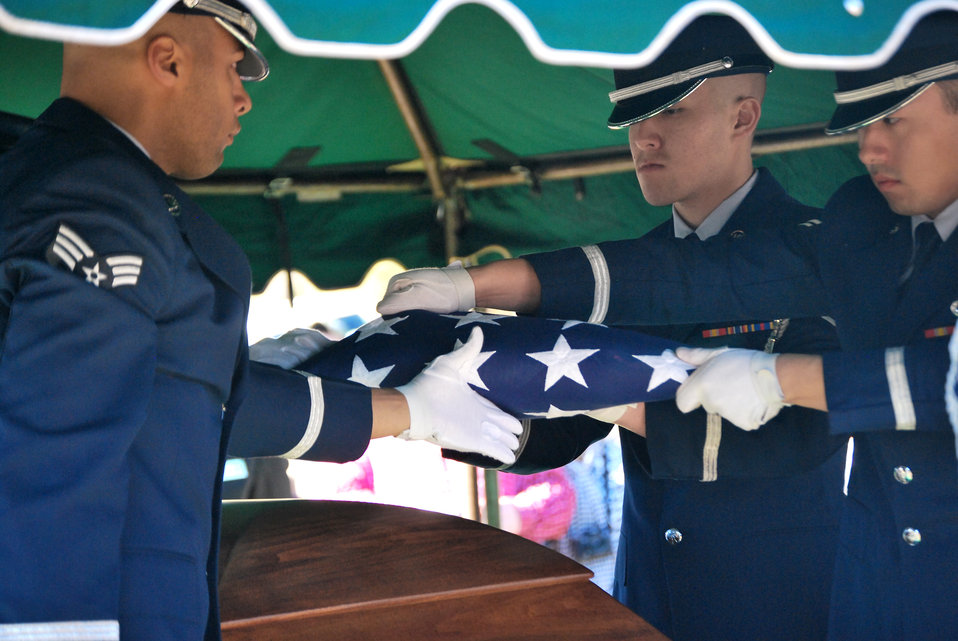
Bringing the Fallen Back Home

Airmen from the Eglin Air Force Base, Fla., Honor Guard fold the flag that covered the coffin of 1st Lt. Robert Franklin Dees during his funeral Jan. 22, 2011, in Ozark, Ala. The flag was presented to Linda K. Dees, the niece of the fallen Airman.